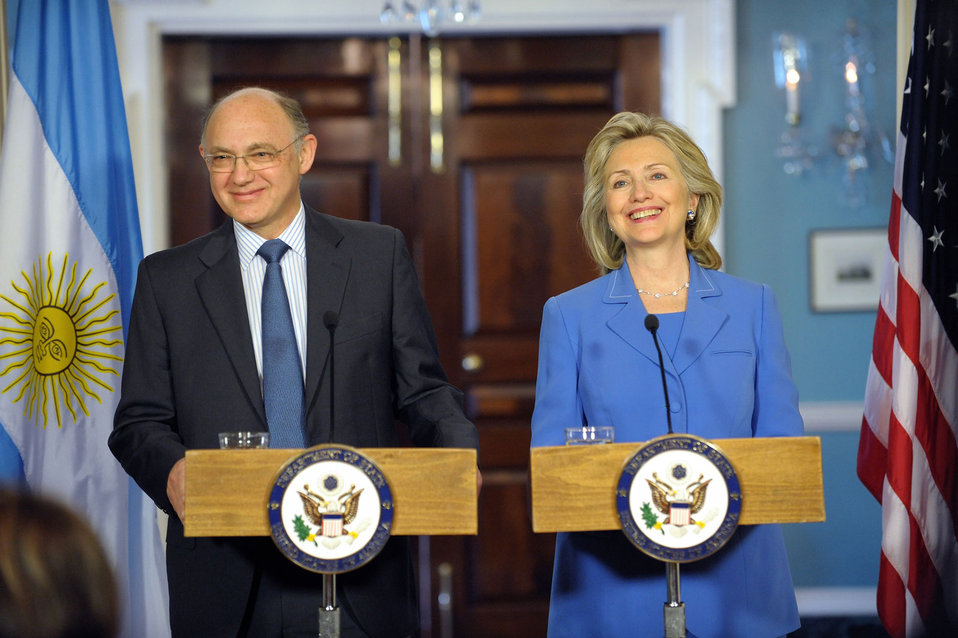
Secretary Clinton Holds a Joint Press Availability With Argentine Foreign Minister Timerman

U.S. Secretary of State Hillary Rodham Clinton holds a joint press availability with Argentine Foreign Minister Hector Timerman following their bilateral meeting at the U.S. Department of State in Washington, D.C., on August 11, 2010.